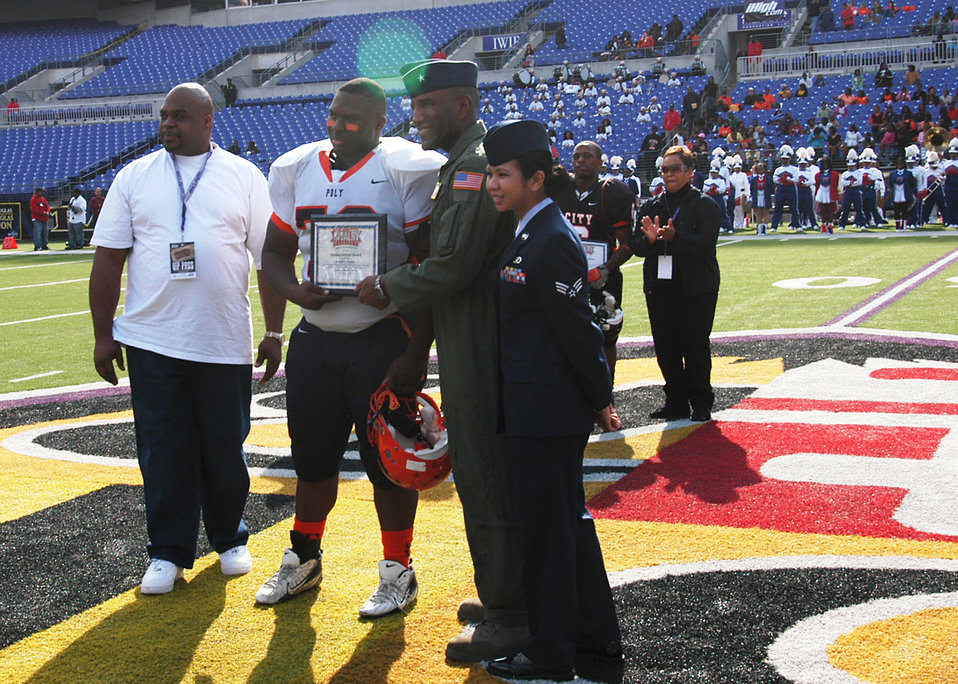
General shares game plan for success

Brig. Gen. Alfred J. Stewart presents Arnold Farmer of Baltimore Polytechnic Institute High School a $500 college scholarship before game time Nov. 8 at M&T Bank Stadium in Baltimore. A Class of 1977 Baltimore Polytechnic Institute High School alumni, General Stewart shared inspirational words with both teams before the game and he presented a $500 college scholarship to a member of both high schools. General Stewart is the Air Force Recruiting Service commander.